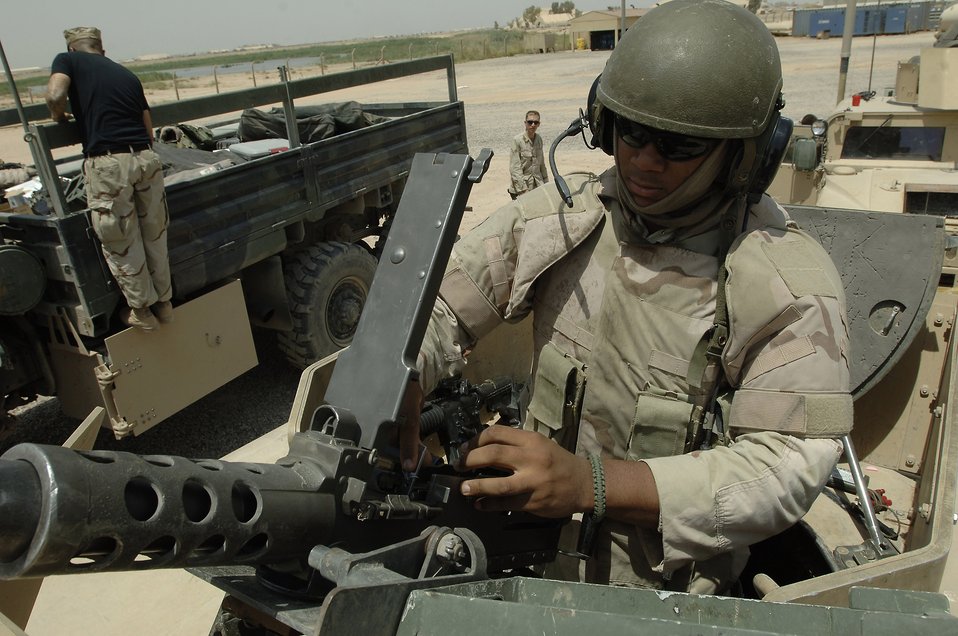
Protection

BALAD AIR BASE, Iraq -- Senior Airman Daniel Upshaw prepares a .50 caliber machine gun for a convoy. Detachment 2 is responsible for protecting truck drivers on convoys across Iraq. Airman Upshaw is assigned to Detachment 2, 732nd Expeditionary Logistics Readiness Squadron, and is deployed from the18th Logistics Readiness Squadron, Kadena Air Base, Japan.